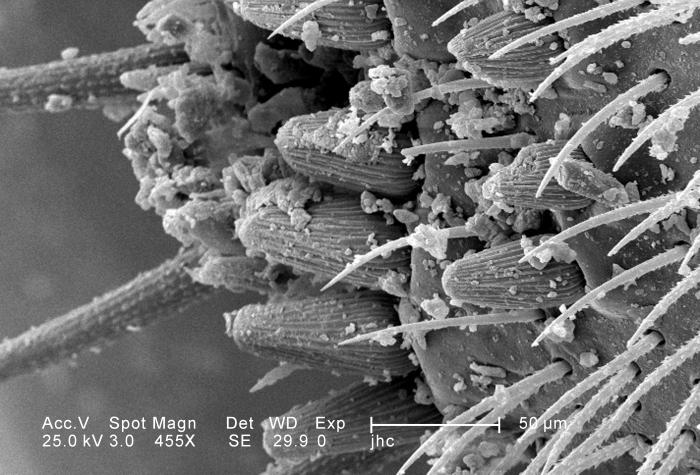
Under a moderately-high magnification of 455X, approximately four times that of PHIL 11796, this scanning electron micrograph (SEM) depicted the ventral caudal abdominal surface of the larval staged antlion, sometimes referred to as a 'doodlebug', because of the trails it leaves in the soft sand as it hunts for prey. This arthropod, i.e., jointed legs, undergoes dramatic morphologic changes when it metamorphoses into a beautiful flying antlion lacewing.